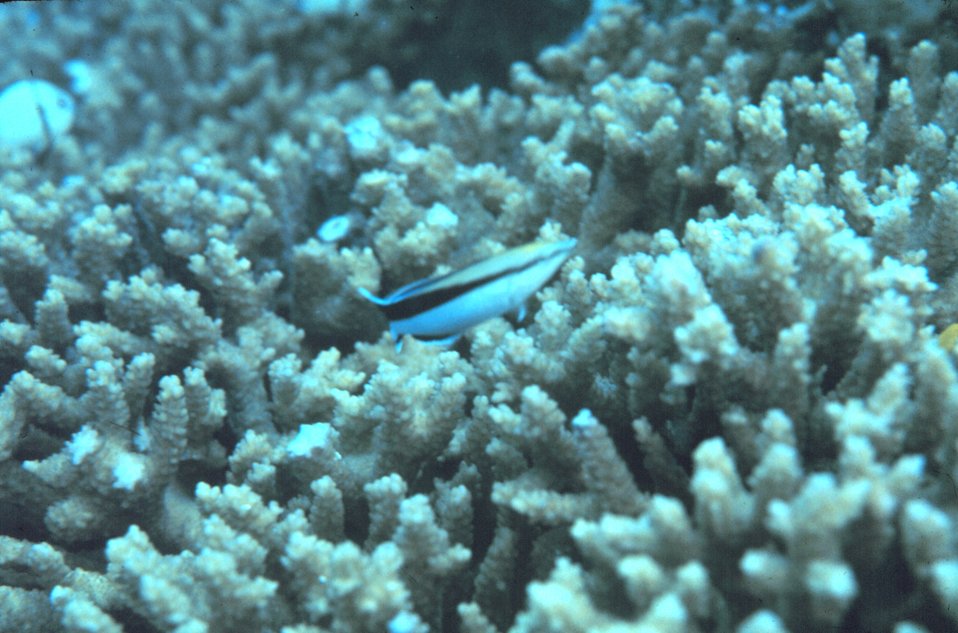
Labroides sp. Cleaning wrasse over acropora coral